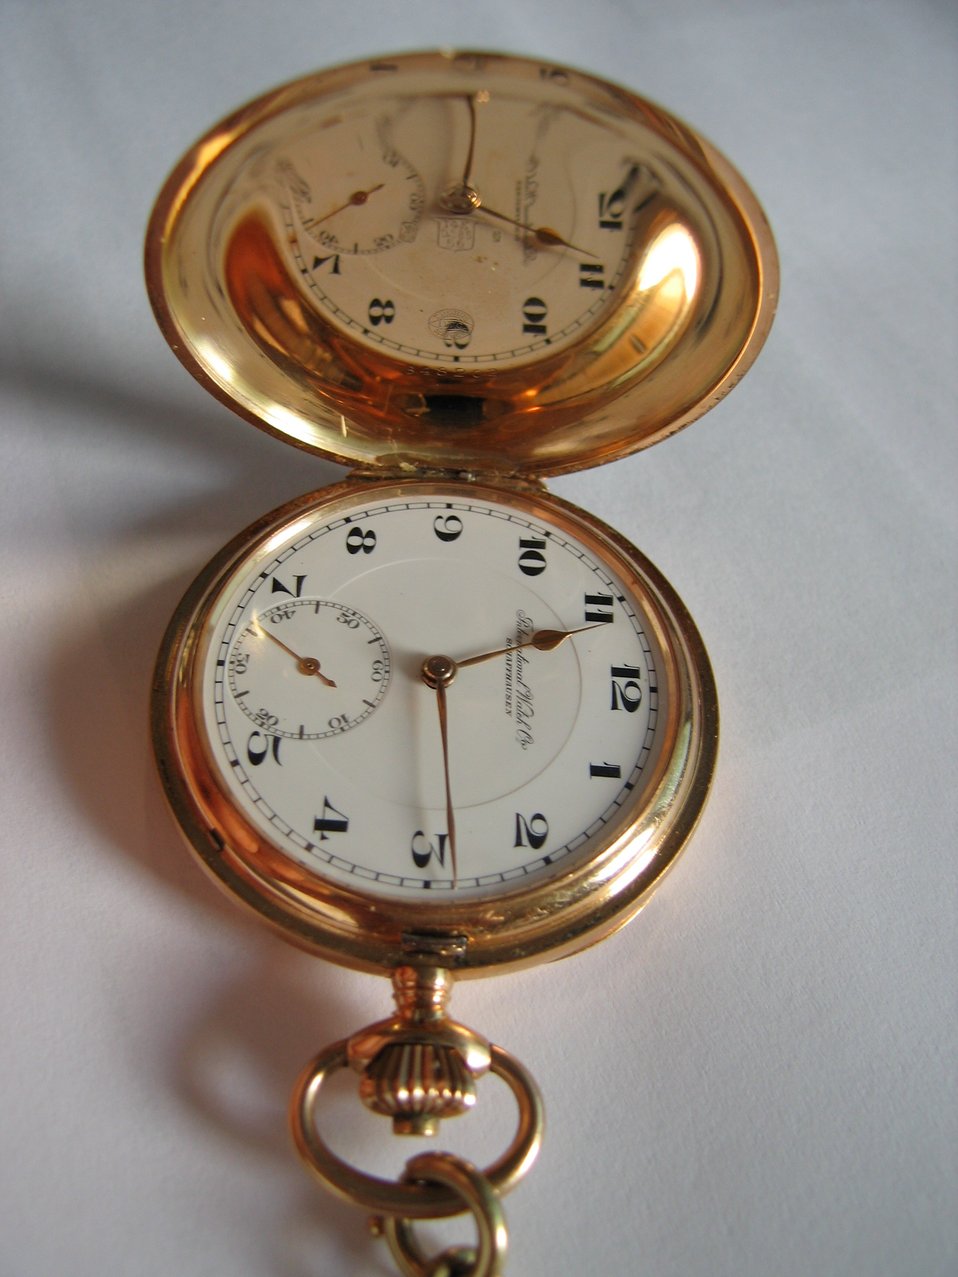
Deutsch: Goldene Taschenuhr